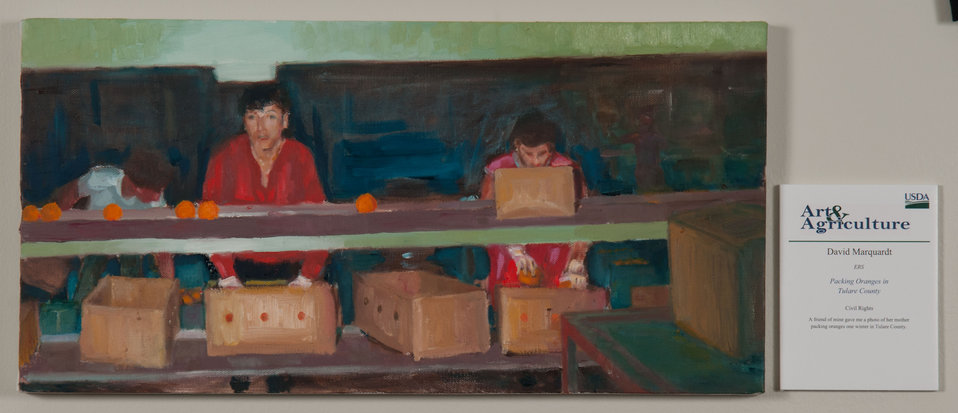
Online Viewer's Choice entries of the 2013 Art & Agriculture, Tuesday, July 9, 2013, in the South Building, Washington, D.C. Themes were expressed by employees from across the department and the contest was open to full-time and part-time USDA employees. Winning artwork will be displayed till the end of the year. U.S. Artistic expression is a creative outlet that is vital for an individual to grow and develop.